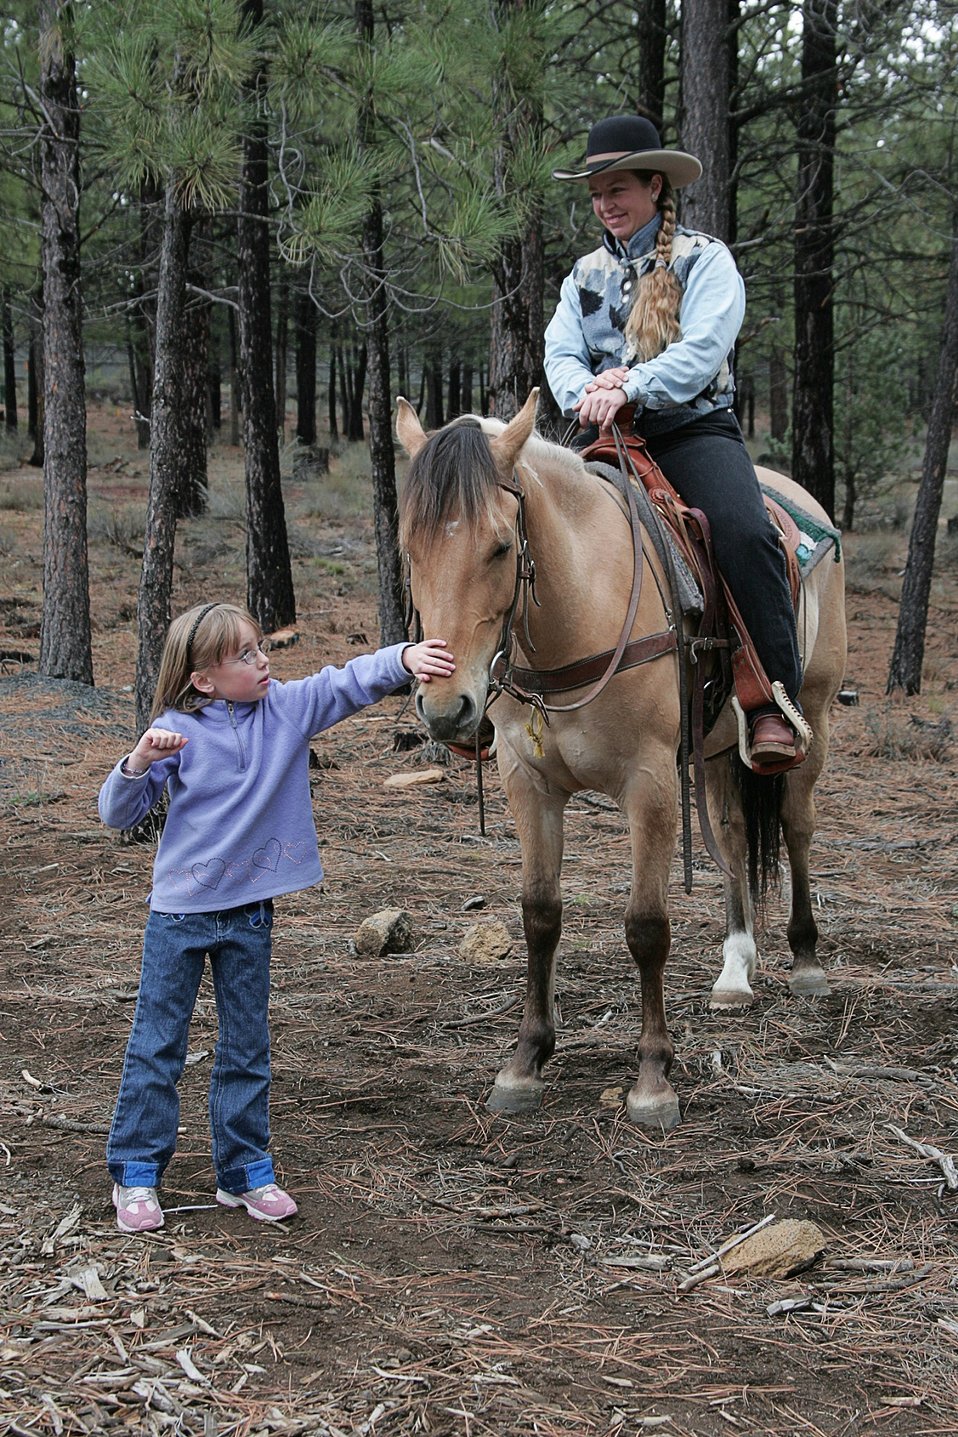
Horse Trainer, Kitty Lauman and Spirit make a new friend at the High Desert Museum wild horse adoption.